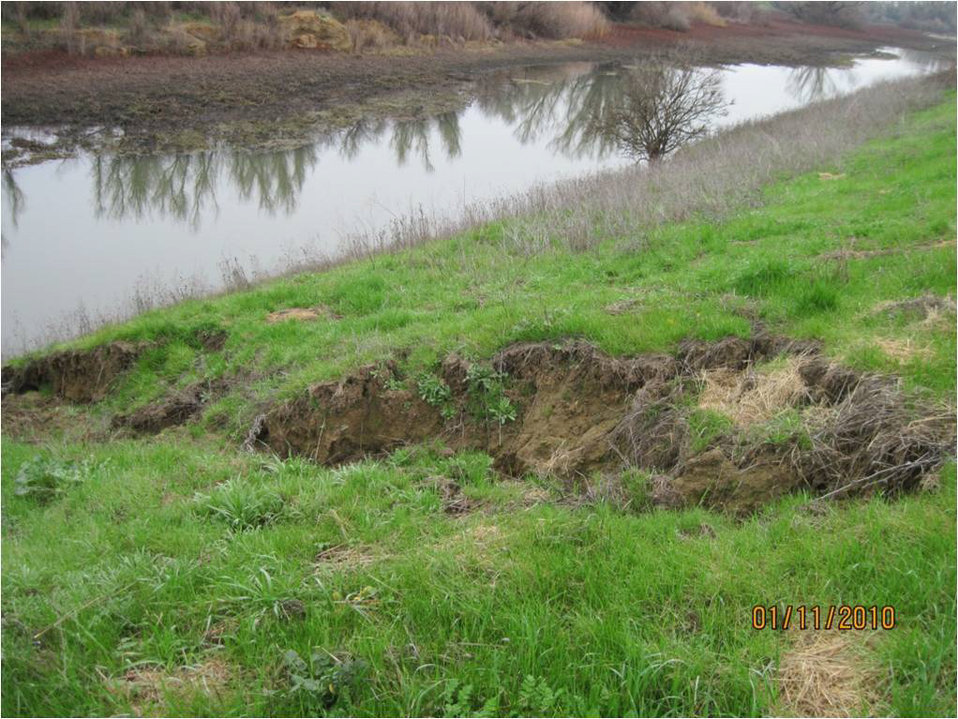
Levee erosion in the Sacramento area

Levee erosion in the Sacramento, Calif., area, shown during a levee inspection in 2010. The U.S. Army Corps of Engineers inspects levees in its Rehabilitation and Inspection Program to ensure levees don’t pose an unacceptable risk to lives and to provide levee managers and residents with detailed information on the condition of levees to help them make informed decisions about safety.